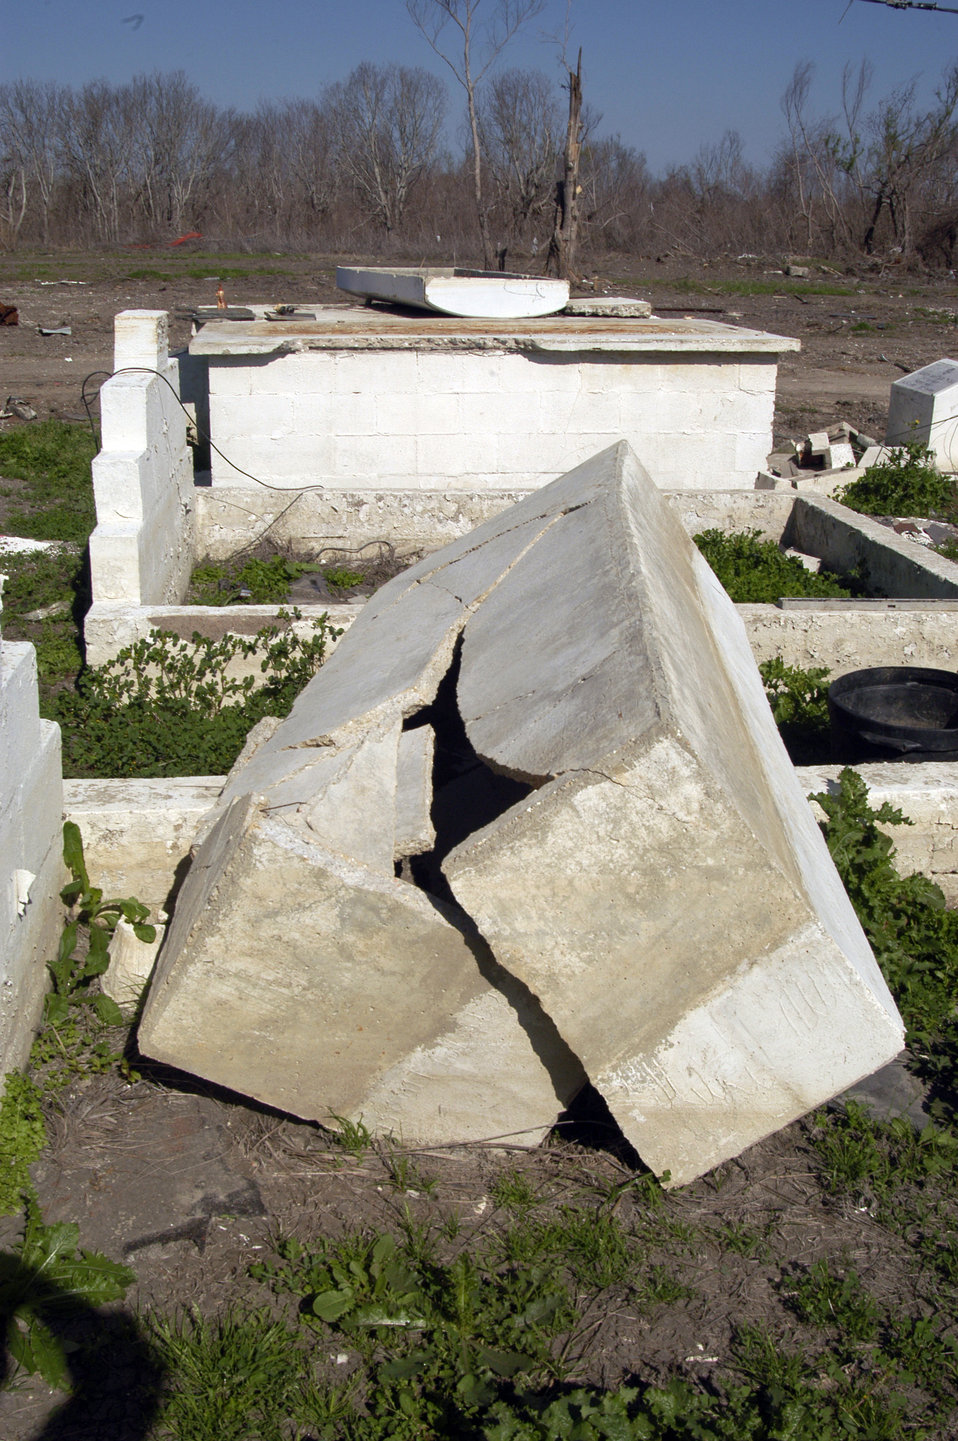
Cemeteries surrounding New Orleans, LA, had crypts ripped from their foundations and the encased remains were swept away by the 20-foot storm surge from Hurricane Katrina. Hurricane Katrina was the 6th strongest hurricane in U. S. history and the 5th deadliest. Katrina made landfall on Monday morning, August 29, 2005 as a Category 3 hurricane with sustained winds of 125 mph with over a 20-foot storm surge. Katrina caused catastrophic damage over 90 thousand square miles across Louisiana with an estimated $75 billion dollars in damage. The total economic impact to the Gulf Coast was estimated at over $150 billion. 80% of New Orleans, LA, was underwater with some areas more than 20 feet deep. Less than a month later southern Louisiana was struck by a second Category 3 hurricane Rita inflicting more damage in the southwestern areas of Louisiana adding an addition $12 billion worth of damage to the already beleaguered state. The U.S. Army Corps of Engineers (USACE) under the auspices of FEMA was the lead service in providing assistance to the citizens of Louisiana. The U.S. Department of Agriculture (USDA) supplied emergency food aid, emergency loan assistance to farmers and home owners, and USDA personnel from around the nation volunteered their time and muscle to aid in the recovery operations.